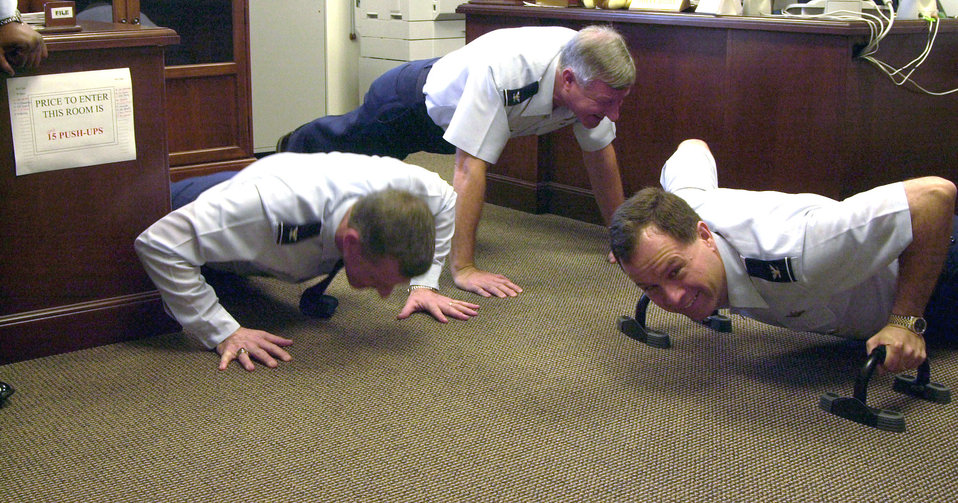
Pushin'em up

BOLLING AIR FORCE BASE, D.C. -- (Clockwise from left) Cols. William Chambers, Bruce Deane and Michael Gardiner voluntarily do pushups in their command section. Airmen from the 11th Wing command section here have been keeping themselves and office visitors